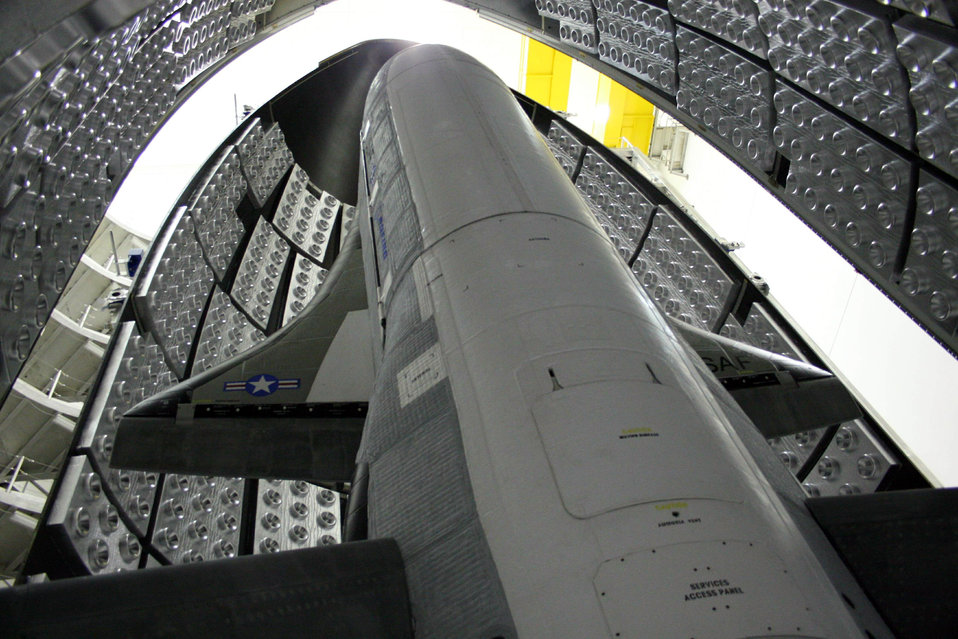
New unmanned spacecraft set to launch

The X-37B Orbital Test Vehicle in the encapsulation cell at the Astrotech facility April 2010, in Titusville, Fla. Air Force officials are scheduled to launch the X-37B April 21, 2010, at Cape Canaveral Air Station, Fla. The X-37B is the U.S.'s newest and most advanced unmanned re-entry spacecraft.